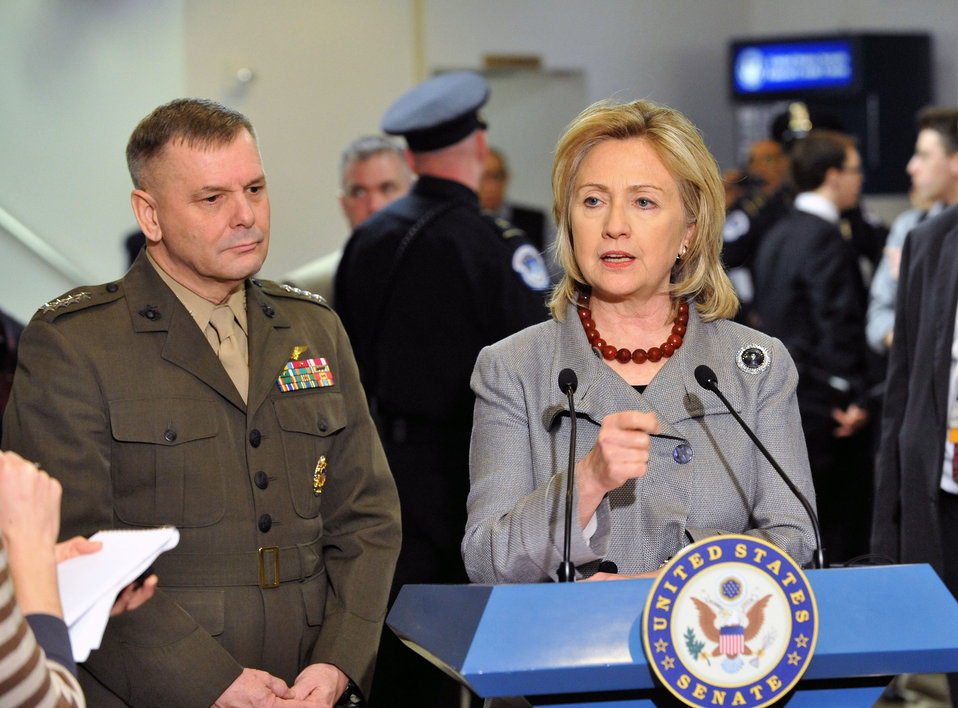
Secretary Clinton Briefs the Press

U.S. Secretary of State Hillary Rodham Clinton briefs the press following her classified briefing for members of the Senate on Capitol Hill in Washington, D.C., on February 17, 2011.